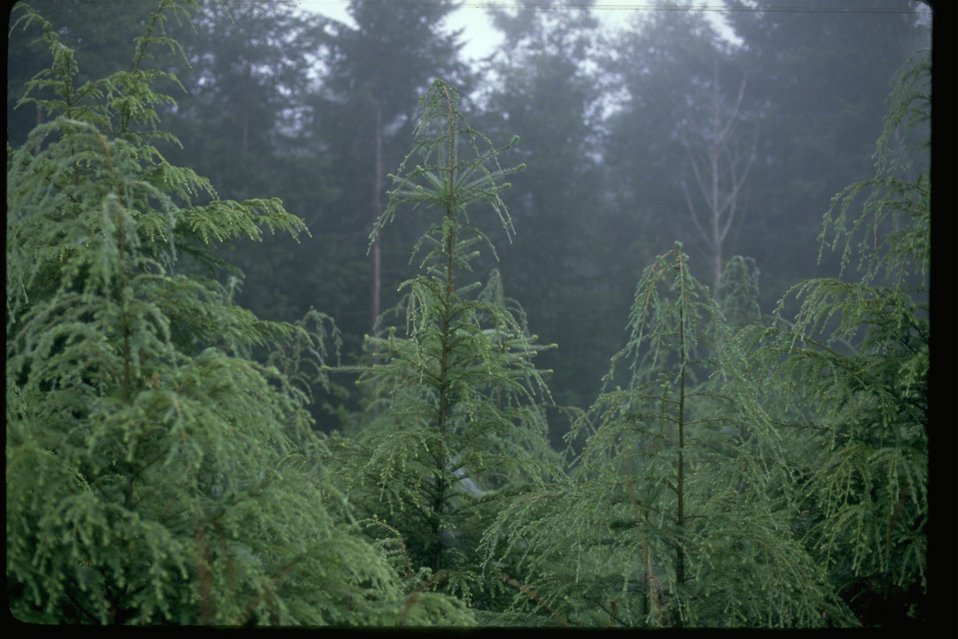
Hemlock reproduction in the fog.